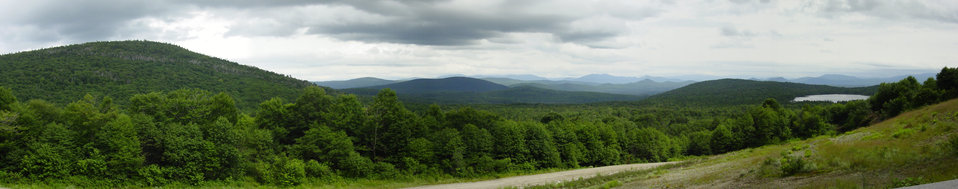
Lewis Pond Overlook Panorama

Nulhegan Basin Division, Silvio O. Conte National Wildlife Refuge.